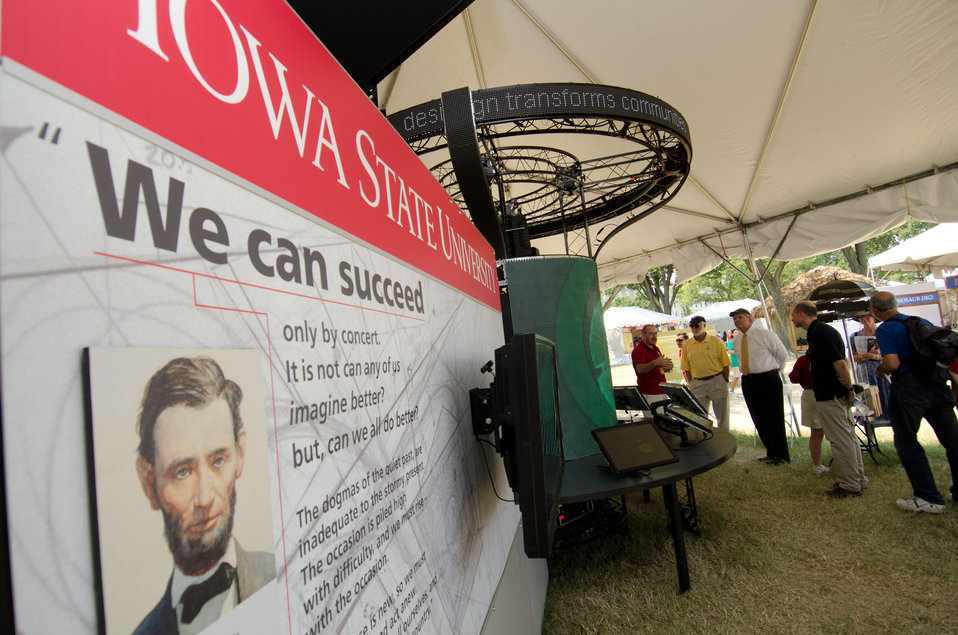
Agriculture Secretary Tom Vilsack, white shirt, stops in at the Iowa State University exhibition tent the 2012 Smithsonian Folklife Festival, on Friday, June 29, 2012 on the National Mall in Washington, D.C. The University says, “Iowa State’s folklife festival exhibit highlights the central role of design in the land-grant mission, and extension’s past, present and future impact on communities. It demonstrates a unique partnership between the College of Design and Extension and Outreach in applying creative problem solving to society’s complex challenges.' Secretary Vilsack is in the exhibit, “Transforming Communities: Design in Action,” that is inspired by Abraham Lincoln’s 1862 national call to “think anew and act anew” to solve the monumental challenges of the era that spawned the Morrill Act. It features examples of the university's completed and ongoing projects in Iowa communities, touchscreen workstations with games for children and adults, and interactive activities with Iowa State faculty and staff.” One of the three themes this year is “Campus and Community.” It celebrates the 150 years of the USDA and the Land-Grant University System. The U.S. Department of Agriculture (USDA) and the Land-Grant system extend education across the country, contributing to American agriculture success and rural prosperity. “Campus and Community” has demonstrations, discussions, hands-on activities, and entertainment to that showcase the many ways that this partnership works to improve American agriculture and rural life.